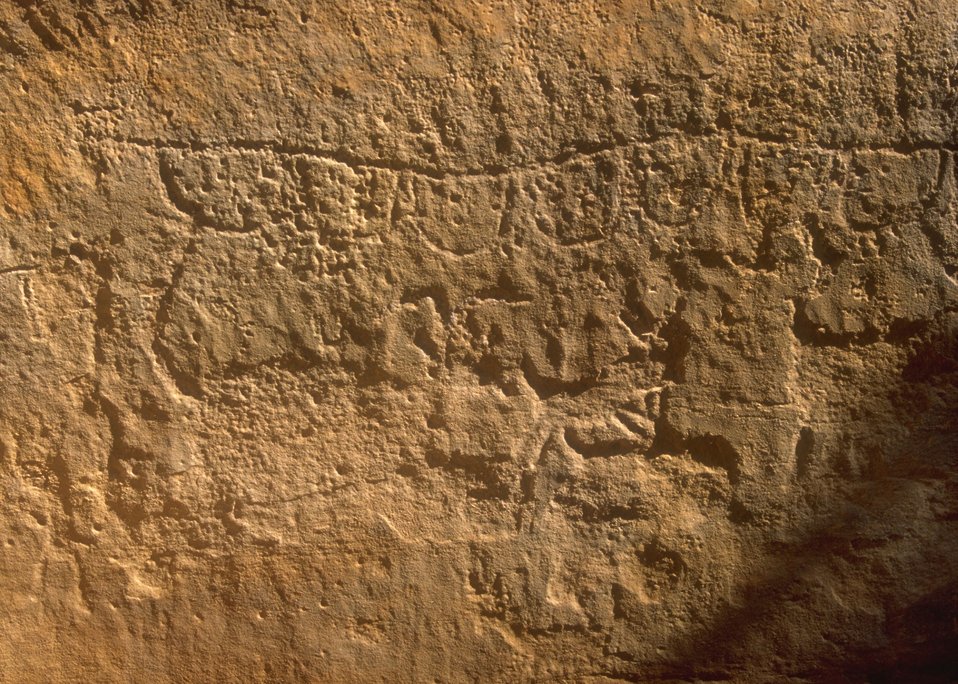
Petroglyph panel in Whoopup Canyon, Newcastle Field Office.